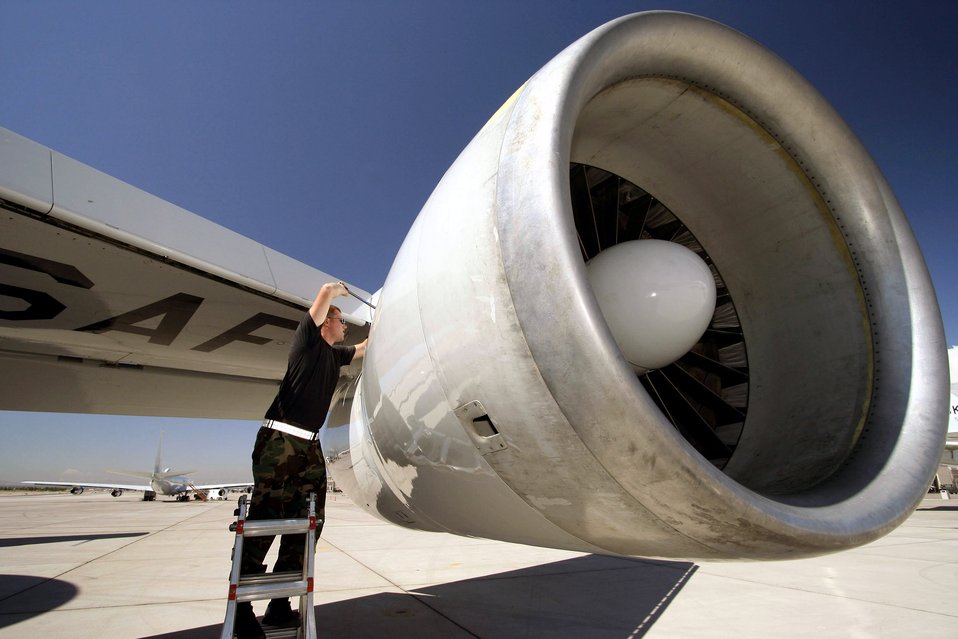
Revving up for Red Flag

Before a launch, crew chief Staff Sgt. Jesse Taylor primes an E-3 Airborne Control and Warning System aircraft's engine during the Red Flag 07-3 exercise Aug. 28 at Nellis Air Force Base, Nev. Servicemembers from all the U.S. military branches, along with coalition forces, are participating in the event. Sergeant Taylor is assigned to the 552nd Air Control Wing at Tinker AFB, Okla.